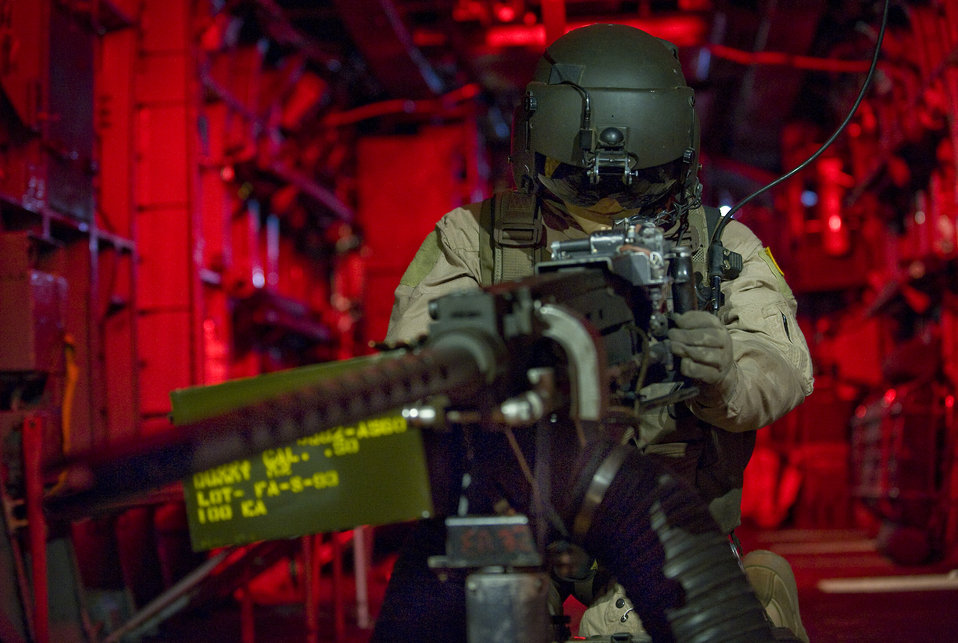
Museum opens exhibit dedicated to 'Warrior Airmen'

An aerial gunner exhibit aboard a MH-53 Pave Low helicopter is one of the many displays of the Warrior Exhibit that uses donated items of Airmen who served in the war on terrorism Jan. 12 at the National Museum of the U.S. Air Force at Wright-Patterson Air Force Base, Ohio.